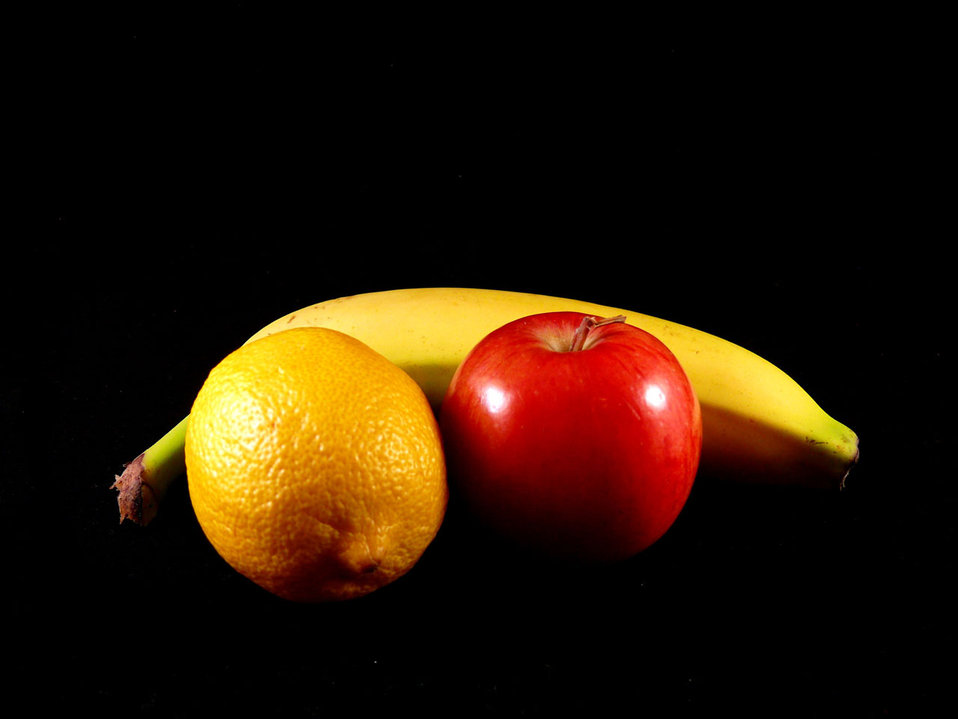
Fruits on black backround.